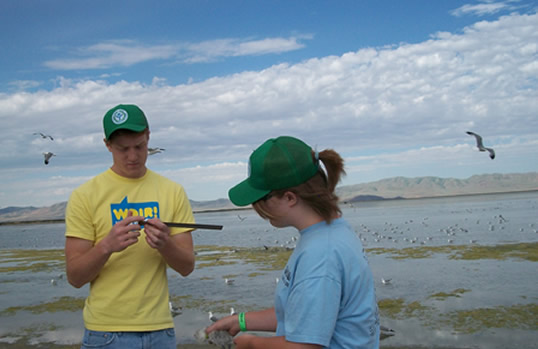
YCC crew banding chicks